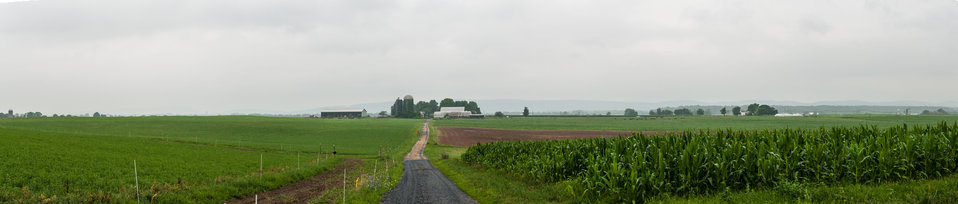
Nick’s Organic Farm, in Adamstown, MD, on Friday, July 12, 2013. The farm, owned by Nick Maravell, produces Black Angus beef, chicken, turkey, eggs, hay, soybeans, corn, alfalfa, orchard grass, rye; and other crops. The cattle are100% grass-fed receiving certified organic pasture, certified organic hay (in winter), water and mineral salts mixed with sea kelp. The cattle are not fed hormones, antibiotics or animal products. Poultry feed from grain is ground from organic grain. The poultry also graze on organic pastures. The farm has conducted on-farm research with federal, state and non-profit agencies to refine organic practices.